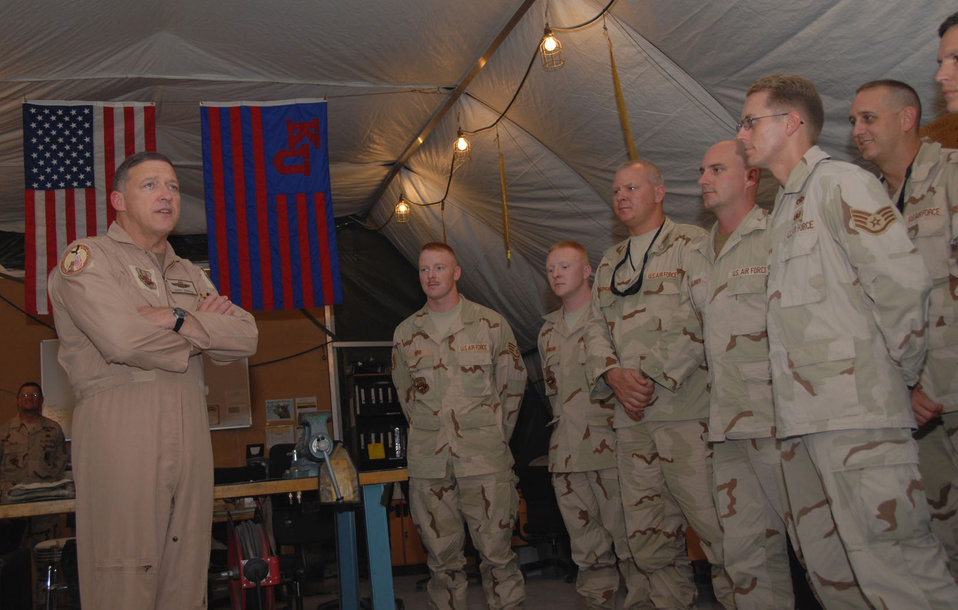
CENTAF commander visits 379th Air Expeditionary Wing

Lt. Gen. Gary North visits with Airmen of the 71st Expeditionary Air Control Squadron in Southwest Asia. The general is the commander of U.S. Central Command Air Forces and 9th Air Force. During his visit, General North discussed the importance of the squadron's mission to the war on terrorism.